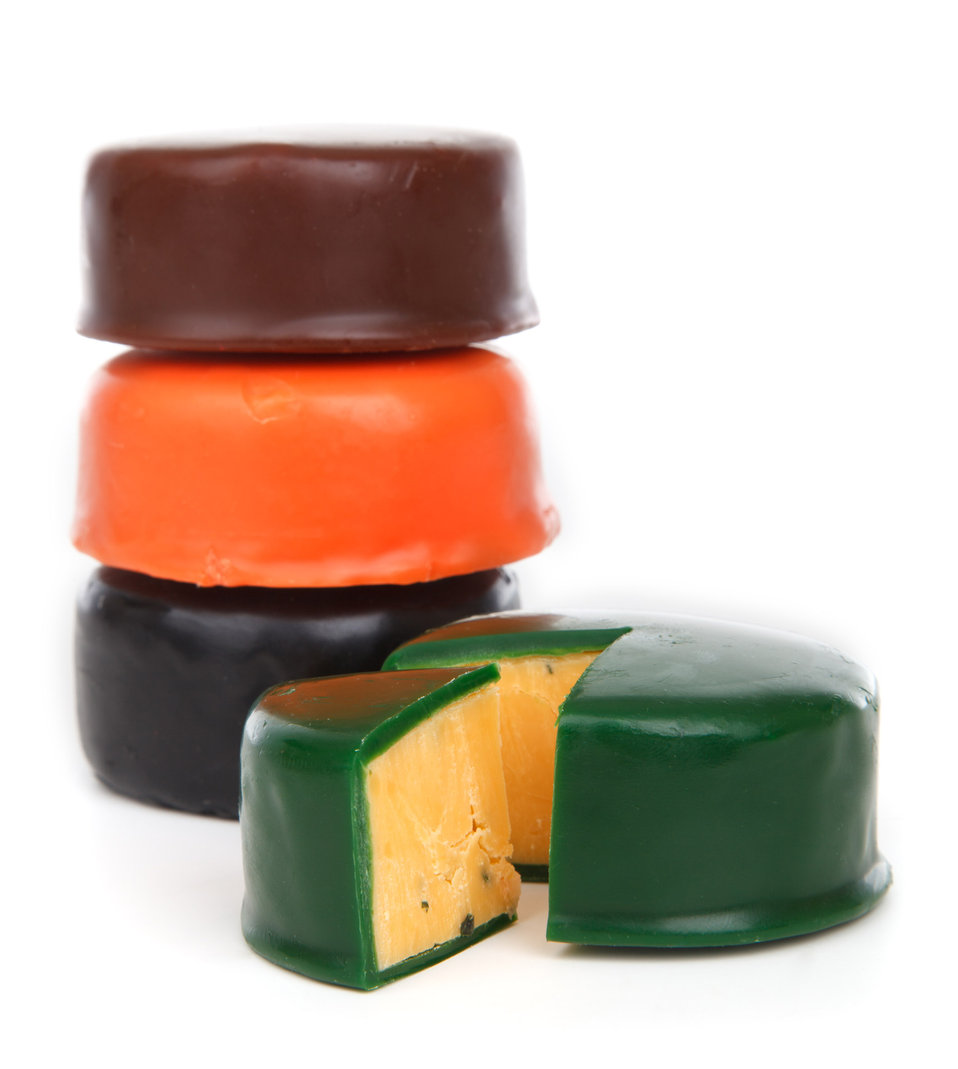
Colorful cheese wheels isolated on white background.